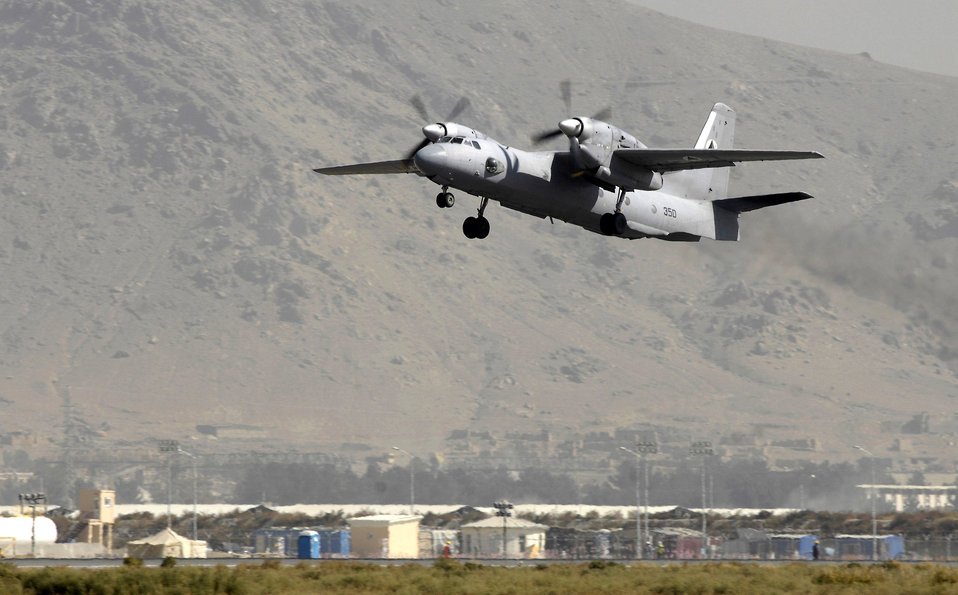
Joint team helps build Afghan air corps

An Afghan national army air corps AN-32 cargo plane takes off Oct. 18 at Kabul International Airport, Afghanistan. The plane's mission is to fly winter supplies to ANA troops in Kandahar. The ANA air corps has been able to fly more cargo to support their own troops due to the recent introduction and training of aircraft loadmasters.